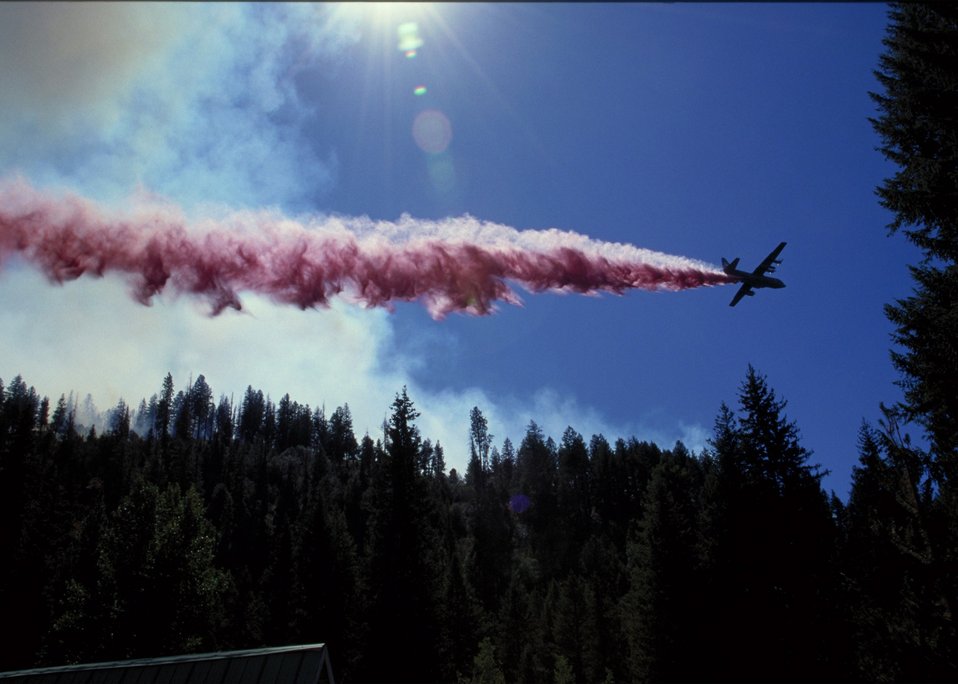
Retardant tanker Fire Season 2000 Lower Snake River District LSRD